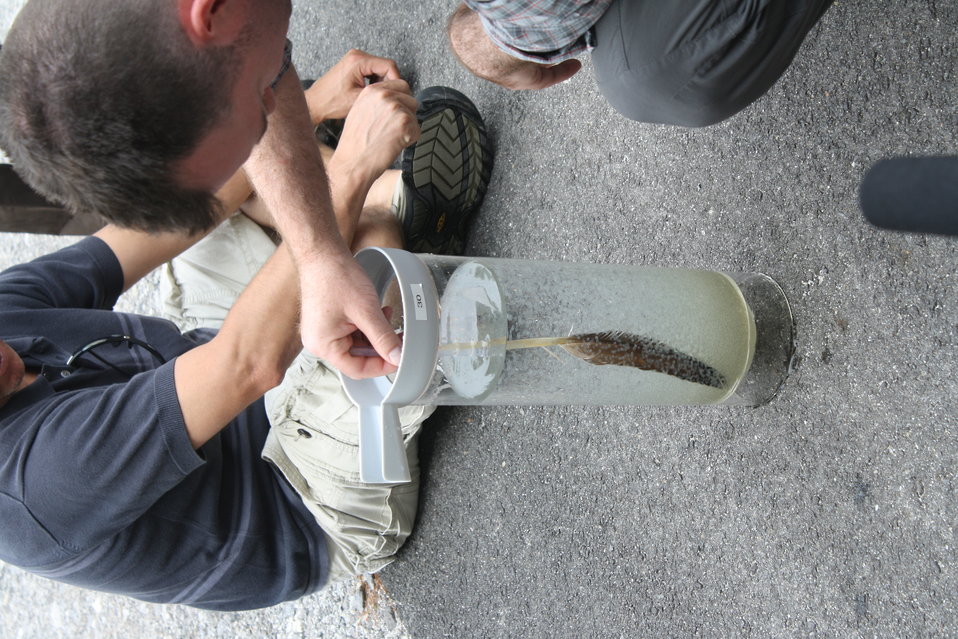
Nashua National Fish Hatchery welcomes regional office employees

Gently stirring shad eggs in sunlight to promote hatching.